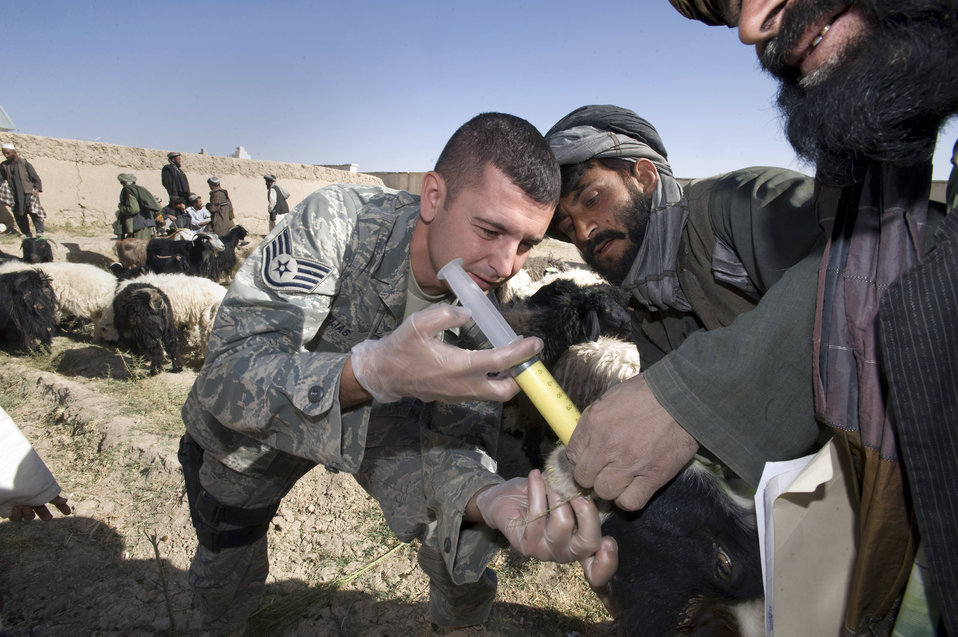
Veterinary care helps build relations with nomadic tribe

Staff Sgt. Don Elias deworms livestock during a veterinary medical outreach conducted by the Zabul Provincial Reconstruction Team Oct. 18 in Qalat, Afghanistan. The PRT members offered free deworming and vitamin supplements during the VMO. Sergeant Elias, a native of Buffalo, N.Y., is deployed from Wright-Patterson Air Force Base, Ohio.